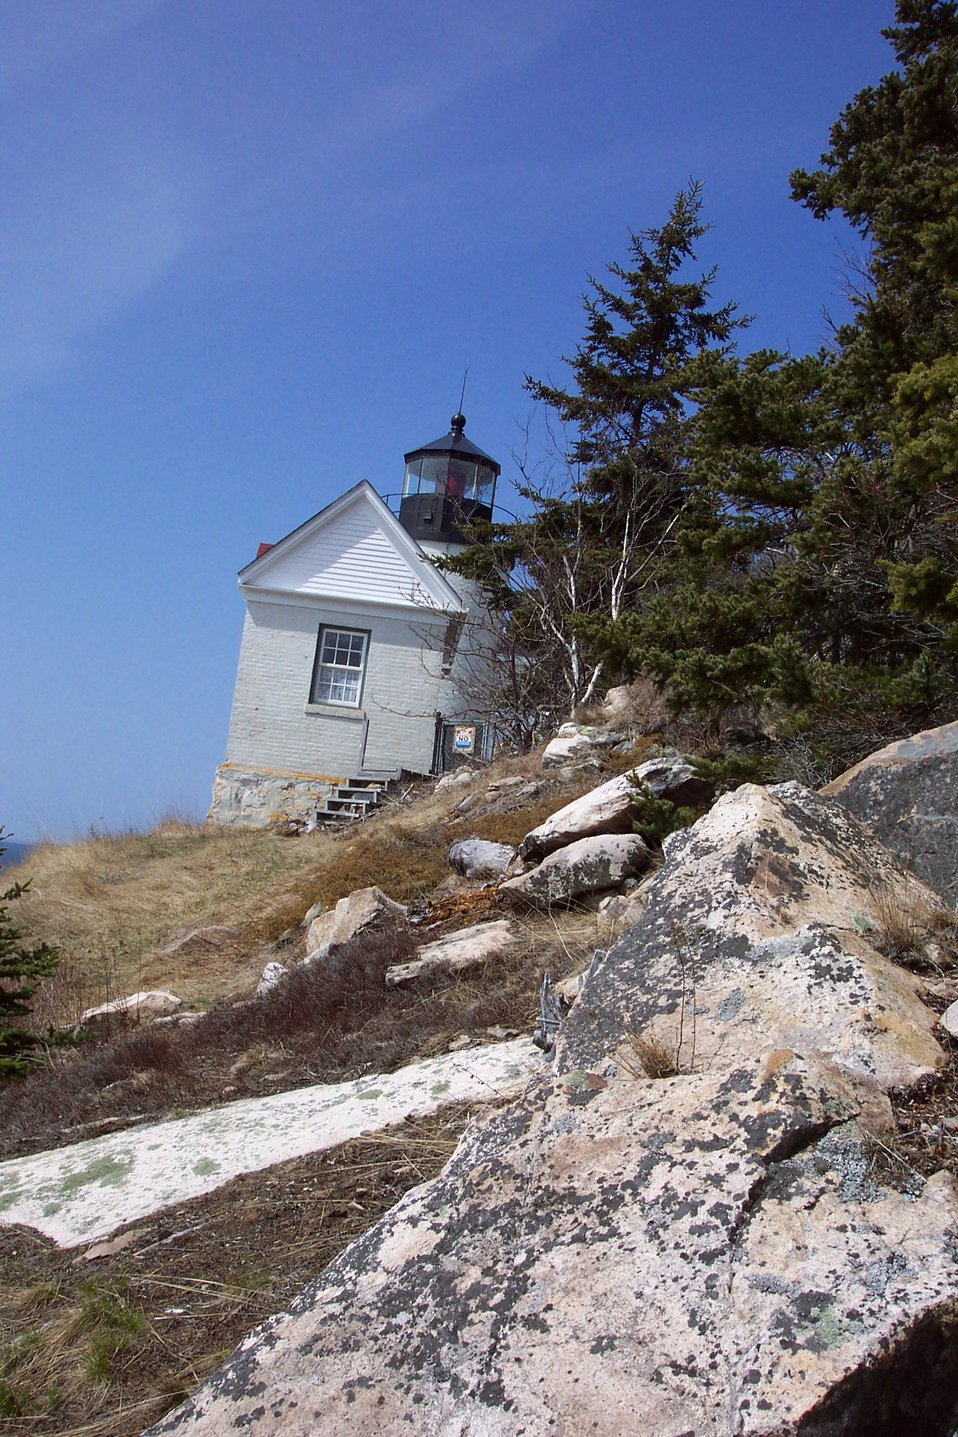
Bass Harbor Head Lighthouse as seen from the east and cliffside.